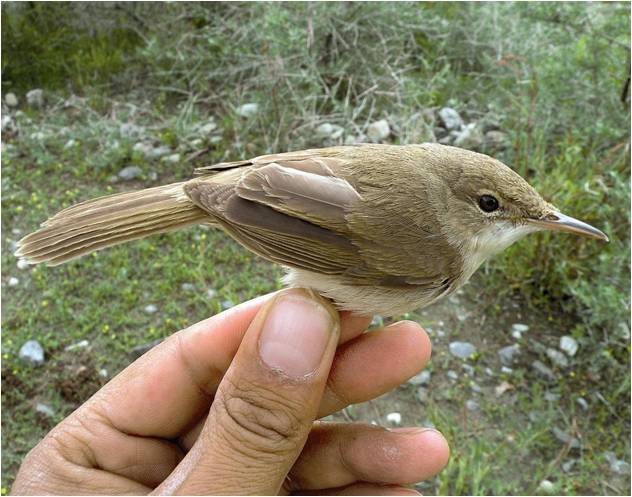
Rare Bird Attracts Tourism and Conservation

Birdwatchers from around the world have their eyes on Afghanistan. In early 2010, researchers from the Wildlife Conservation Society (WCS) working on USAID’s Biodiversity Conservation and Natural Resource Management project discovered the breeding area of the rare large-billed reed warbler, dubbed the world’s least known bird species, in the remote and rugged Wakhan Corridor of the Pamir Mountains in northeastern Afghanistan. Within days of the announcement, organizations interested in bringing birdwatchers to the area were contacting WCS.
National Geographic Adventure magazine has named the Wakhan Corridor as one of the “25 Best New Trips in the World.” With USAID assistance, the area’s local communities have been working steadily over the past four years to create the organization and capacity necessary to protect and benefit from their unique and visually stunning environment.
Local community councils have banded together to form the Wakhan Pamir Association, an officially registered Afghan organization with 1,200 dues-paying members that will ultimately be responsible for the Corridor’s planned protected areas. Community members and government officials have already demarcated the first proposed protected area and established mechanisms to allow the communities to receive income from national park admissions and related services.
WCS trained community rangers, who conduct wildlife surveys and discourage hunting of rare species such as snow leopards and Marco Polo sheep, now patrol most of the Wakhan Corridor. All area schools have environmental protection programs and WCS has instituted English-language training programs to allow locals to better interact with tourists. Training on guesthouse management, food service hygiene, guide services, and related topics is underway, and a glossy English-language brochure for the region is now available.
Whether called by a bird song or the dramatic mountain vistas, visitors to the Wakhan will find a community that values its resources and provides value for its guests.